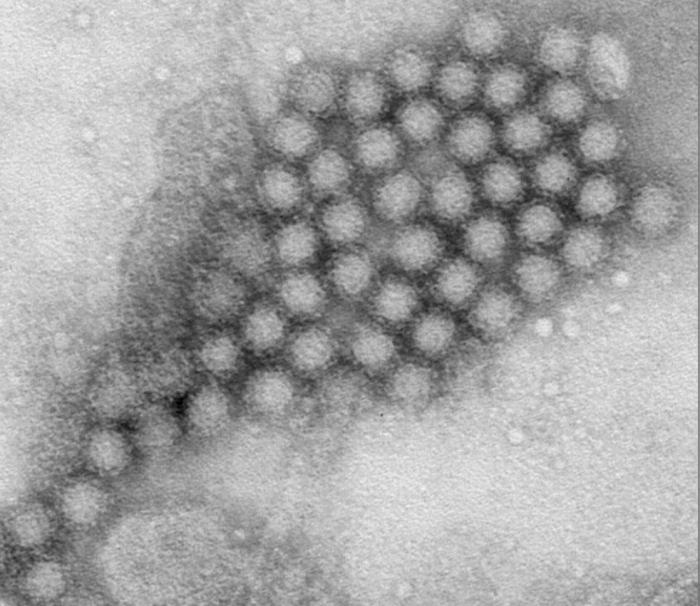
This transmission electron micrograph (TEM) revealed some of the ultrastructural morphology displayed by norovirus virions, or virus particles.